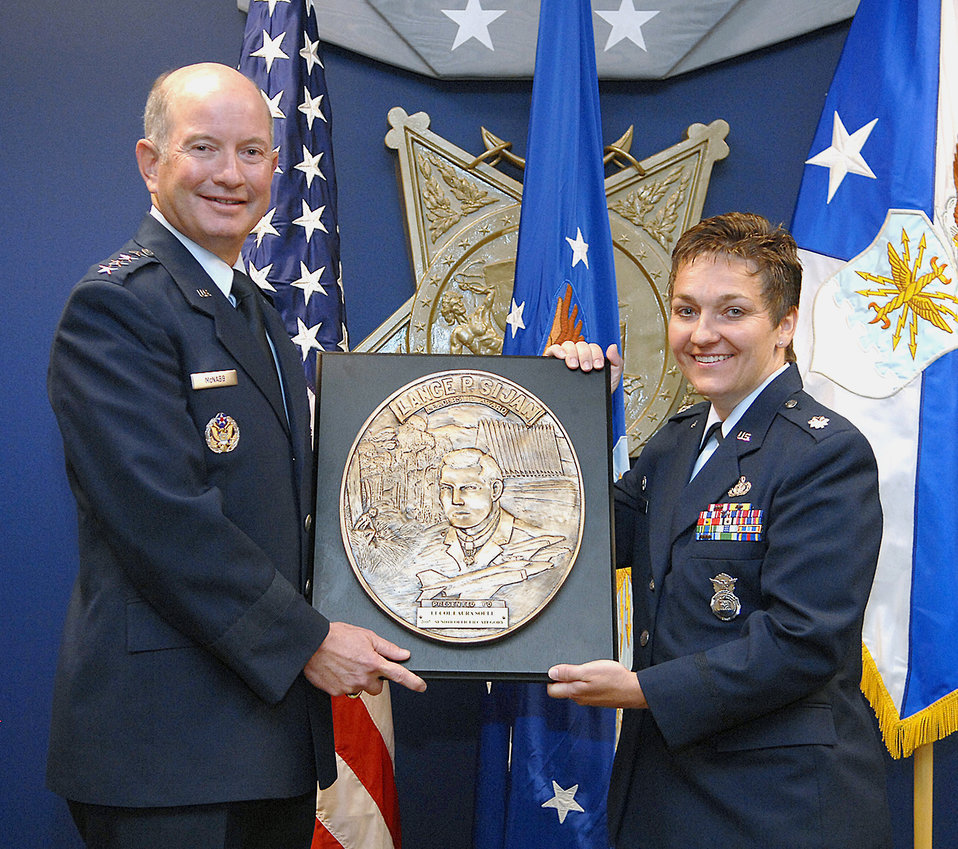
Airmen receive Sijan leadership award

Vice Chief of Staff of the Air Force Gen. Duncan J. McNabb presents the Lance P. Sijan Air Force Leadership Award to Lt. Col. Laura A. Soule in a ceremony Aug. 20 at the Pentagon. Colonel Soule is the commander of the 37th Security Forces Squadron at Lackland Air Force Base, Texas. The Sijan Award recognizes Airmen who demonstrated outstanding leadership while assigned to an organization at the wing level or below.